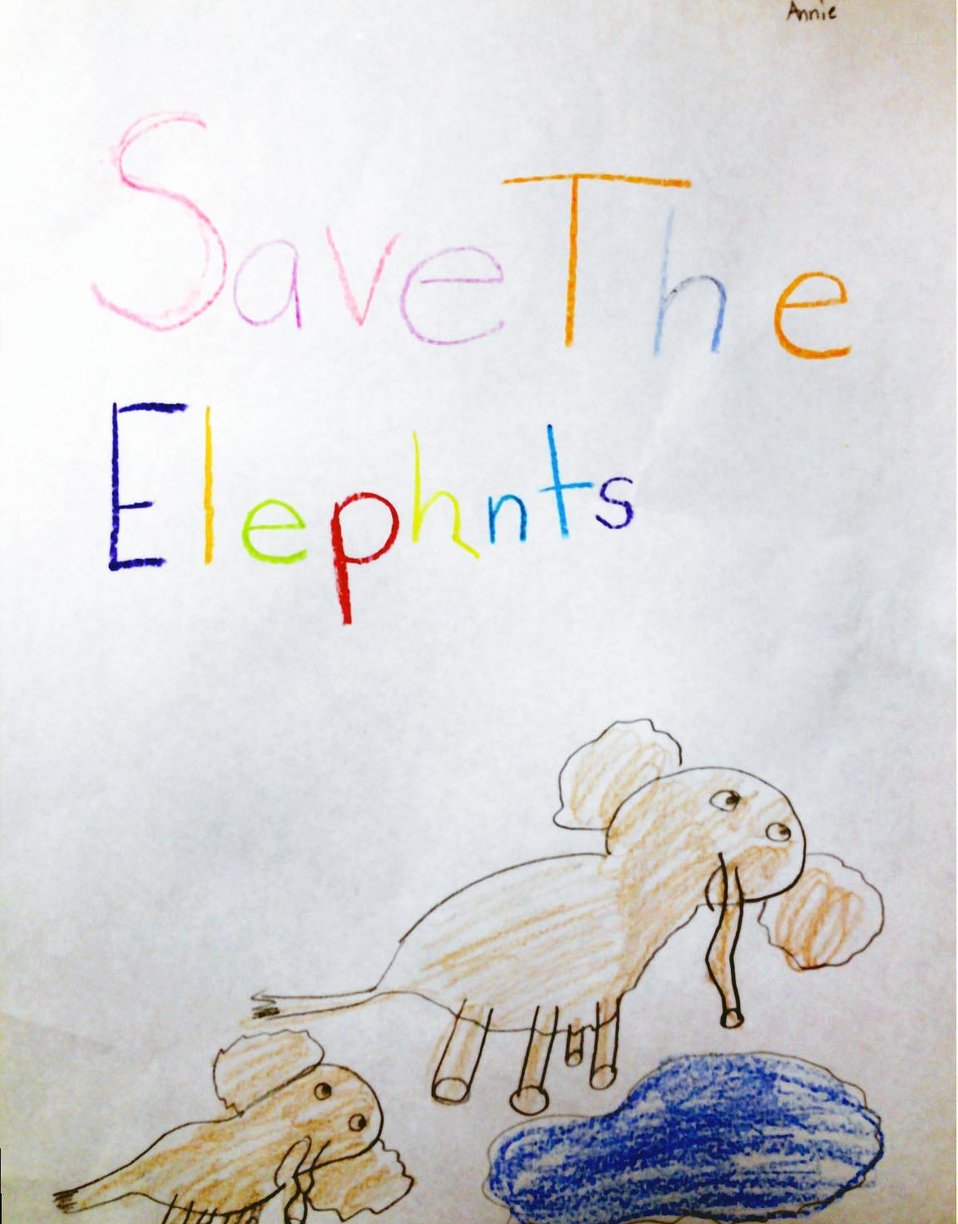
Drawing by Annie